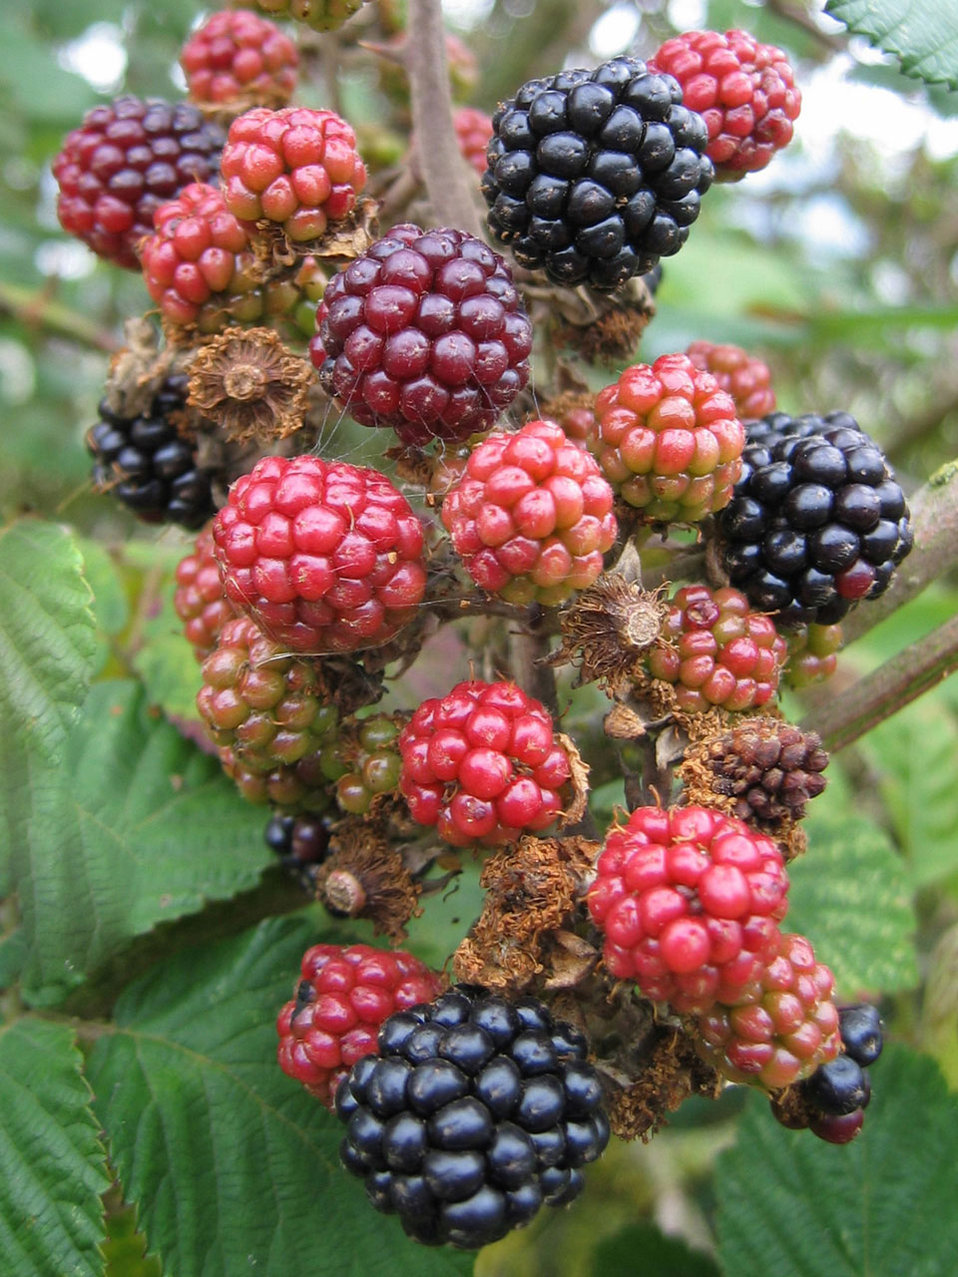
Unripened blackberries close-up.